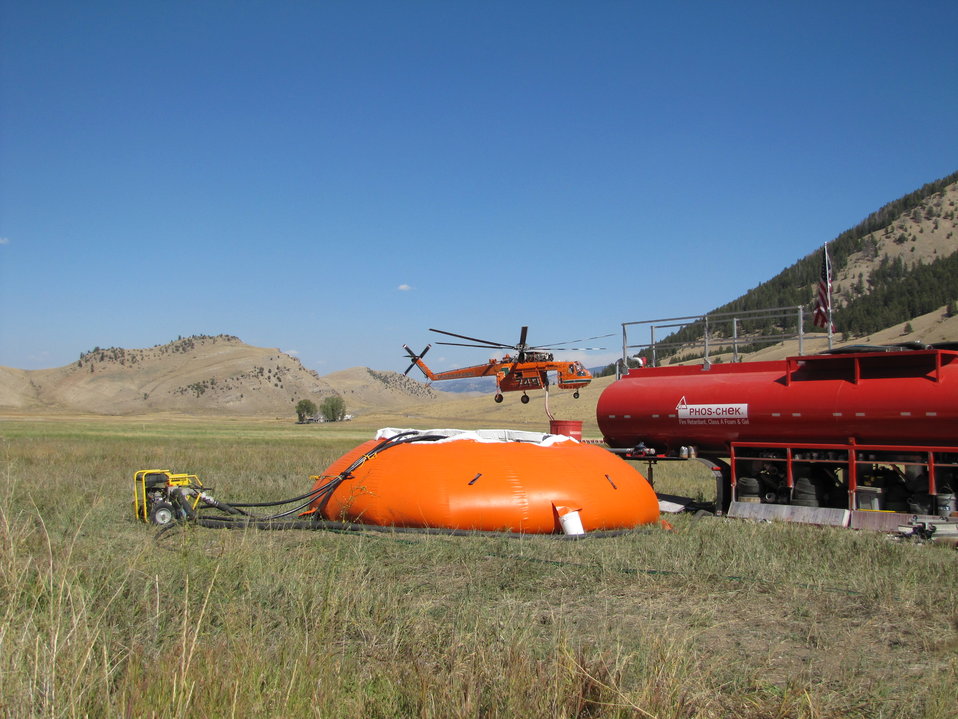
Refuge's Irrigation System Supplies Water for Fire Operations

Three 2-inch diameter hoses lead into a 10,000 gallon freestanding water tank, or 'pumpkin,' which serves as a holding tank. One 4-inch diameter hose draws water away to the portable retardant mixing plant as needed. The water was supplied by the National Elk Refuge's irrigation system.

A Sikorsky S-64E, also called a Skycrane, can be seen drawing retardant from a dip tank in the background.